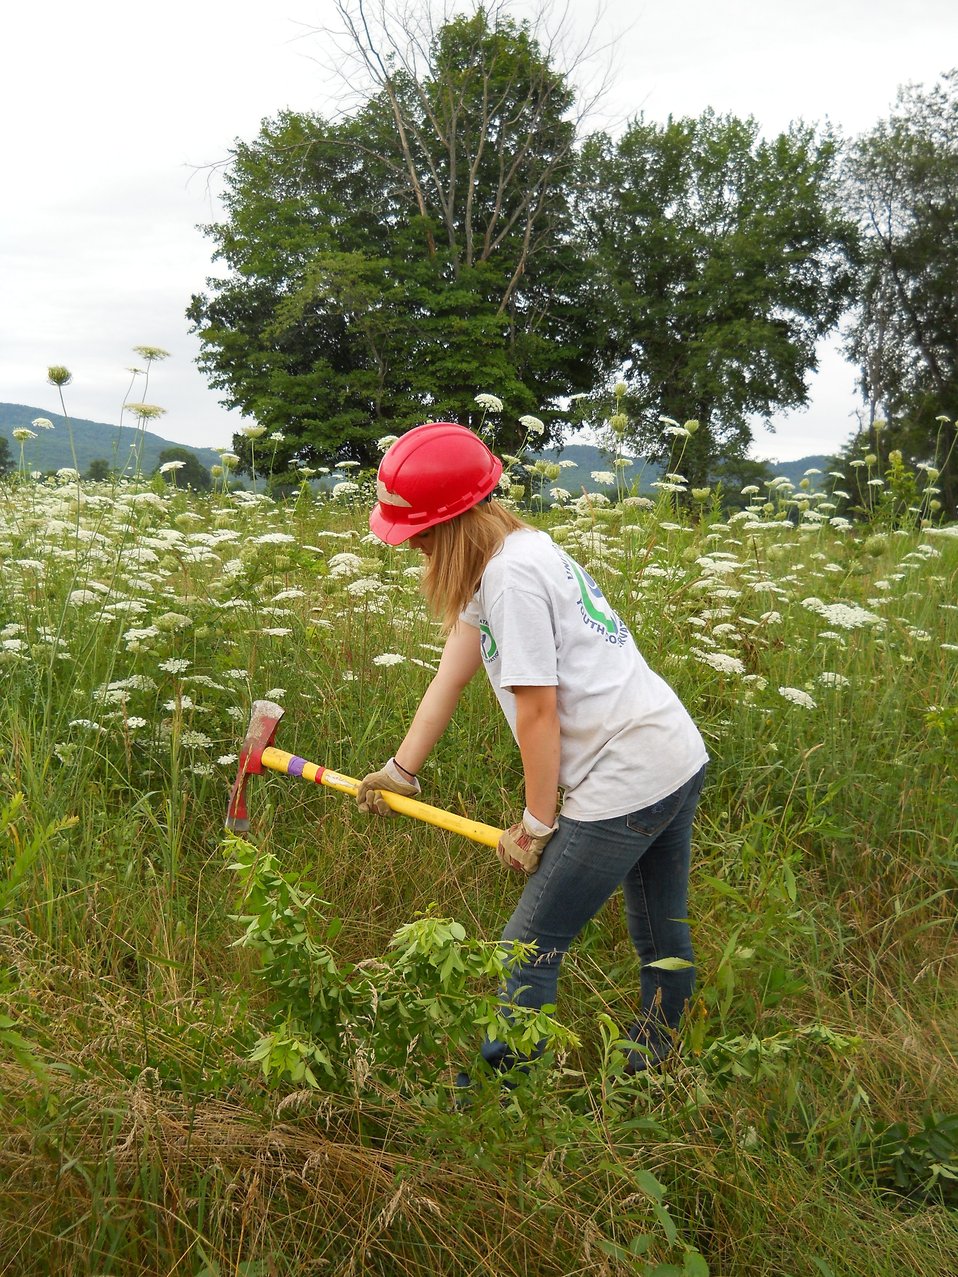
Controlling invasive species

A YCC crew member controls multiflora rose at the Silvio O. Conte National Fish and Wildlife Refuge.